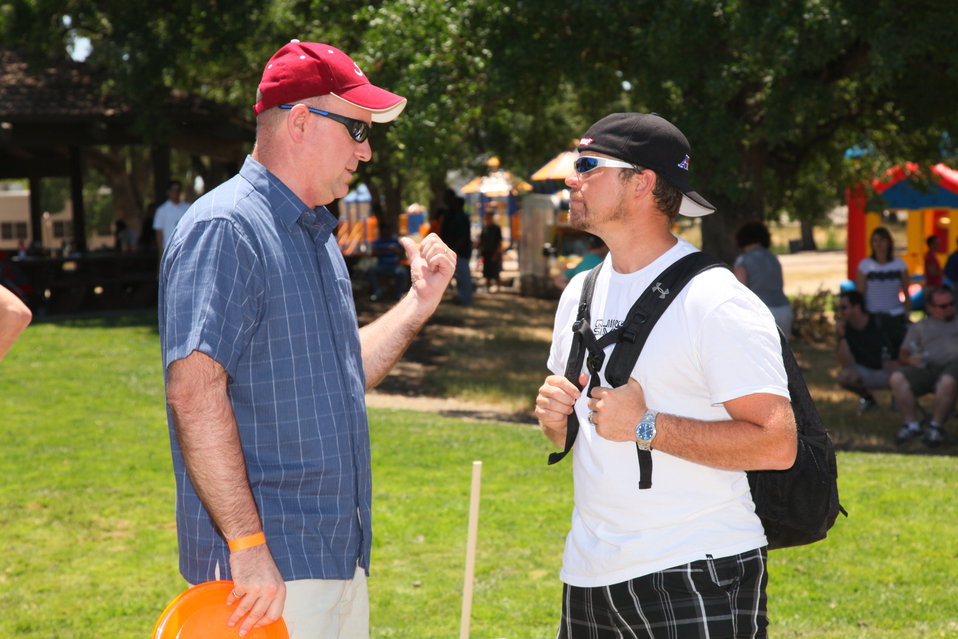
2011 Annual Picnic